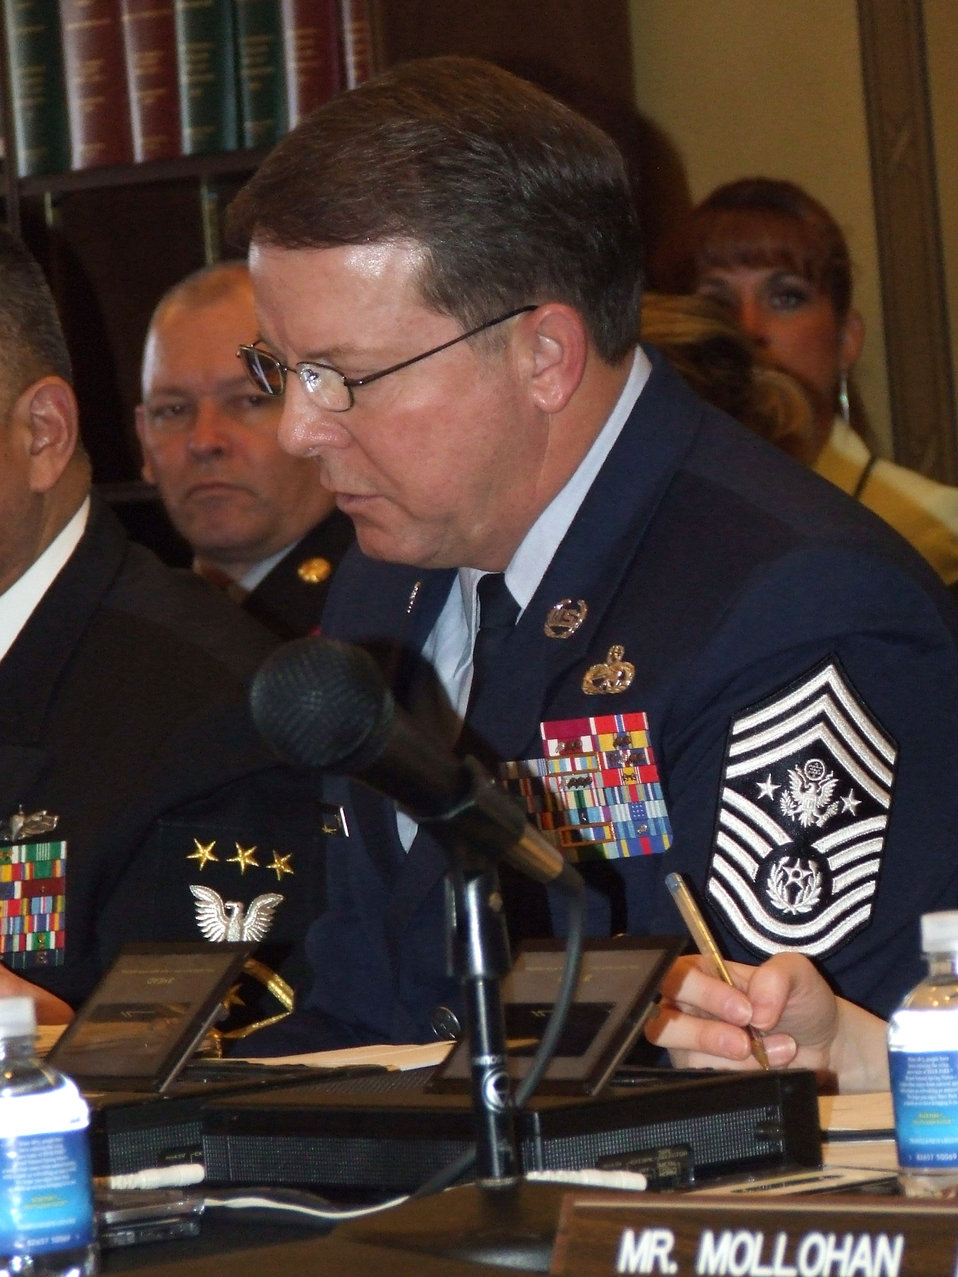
Chief McKinley testifies before Congress

Chief Master Sgt. of the Air Force Rodney J. McKinley testifies before the House Appropriations Committee, Military Quality of Life and Veterans' Affairs Subcommittee Feb. 9 in Washington, D.C. As the Air Force's senior enlisted leader, Chief McKinley addressed quality of life, global combat and Air Force readiness issues with the subcommittee.